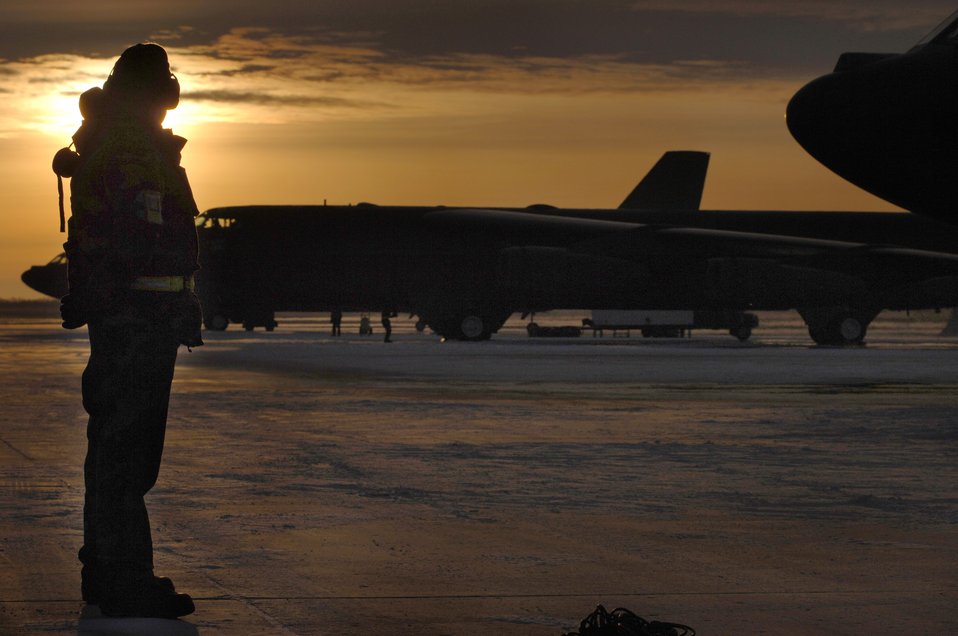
B-52 launch

MINOT AIR FORCE BASE, N.D. (AFPN) -- Staff Sgt. Christopher Oliva waits to launch a B-52H Stratofortress here. Nine bombers participated in a rapid launch exercise testing the base's ability to respond quickly to national directives. Sergeant Oliva is with the 5th Aircraft Maintenance Squadron.